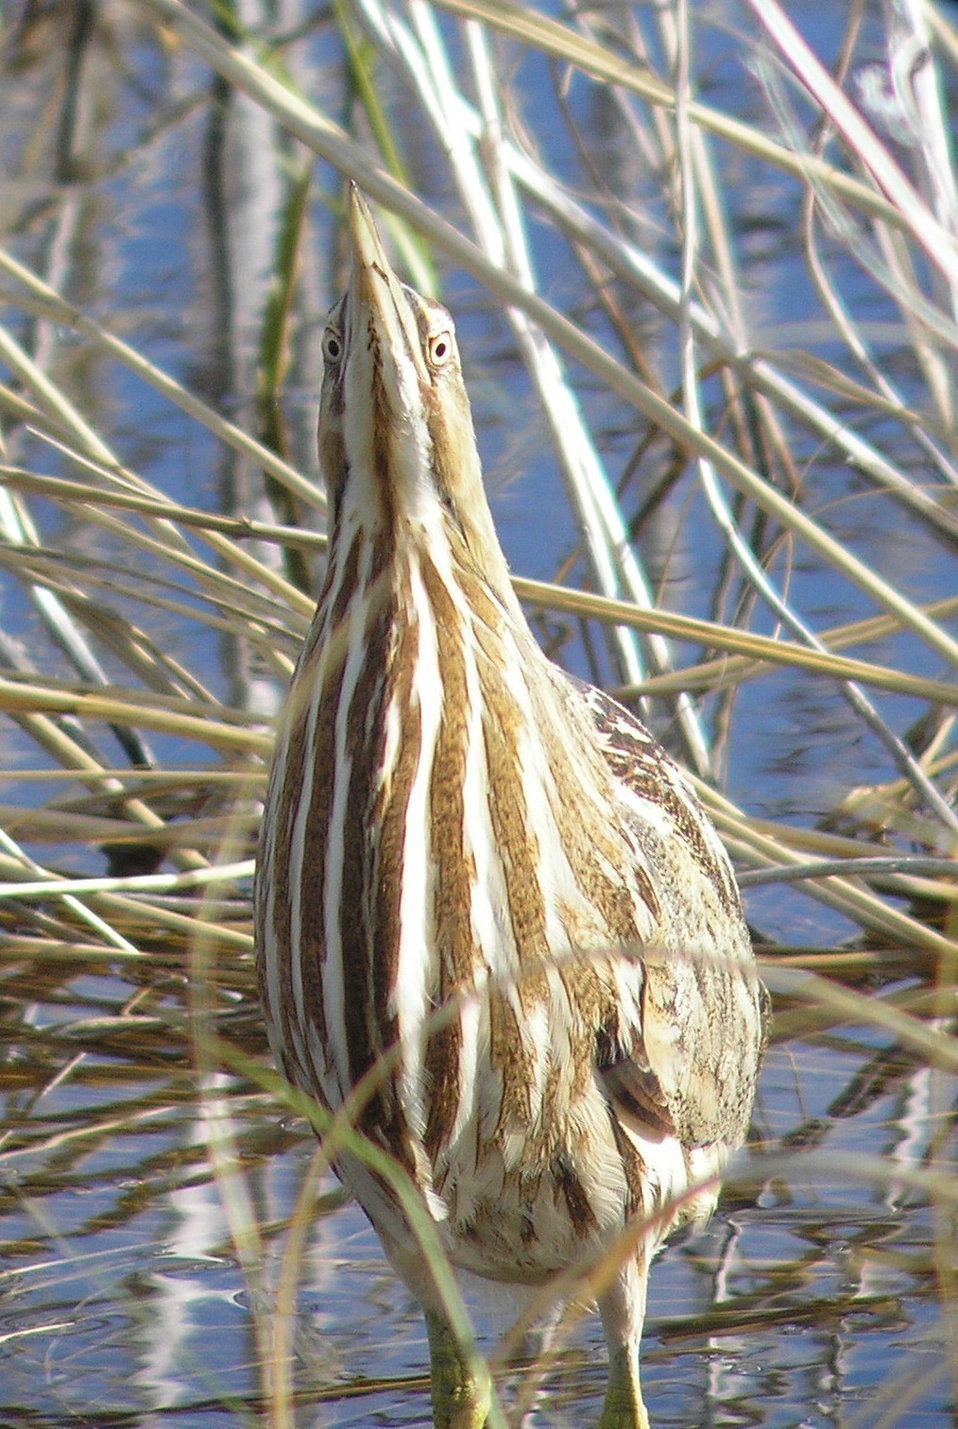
American Bittern on Lacreek NWR 4